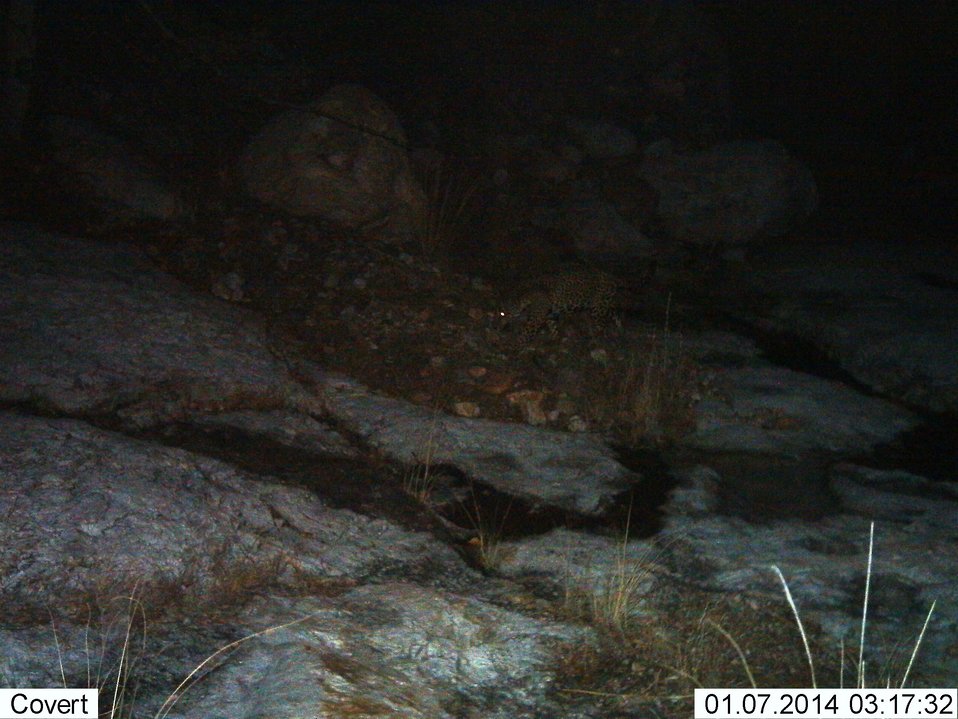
Male Jaguar (Paired Photo)

UA Jaguar 2014-01-07 (03.17).jpg] Male jaguar photographed by automatic wildlife cameras in the Santa Rita Mountains on January 7, 2014, as part of a U.S. Fish and Wildlife Service/Department of Homeland Security-funded jaguar survey conducted by University of Arizona. This is one of two jaguar photos taken from paired cameras (both sides of jaguar photographed) on January 7. This paired photo location is new but not far from previous photo detections.